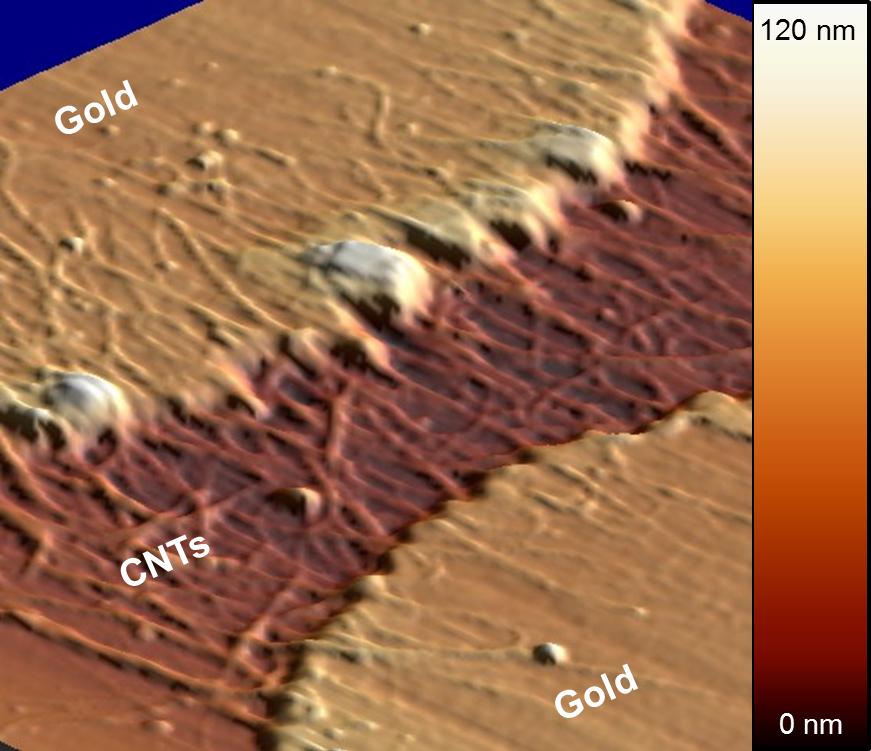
Gold Electrodes

Micrograph of recession and clumping in gold electrodes after NIST researchers applied 1.7 volts of electricity to the carbon nanotube wiring for an hour. The NIST reliability tests may help determine whether nanotubes can replace copper wiring in next-generation electronics.